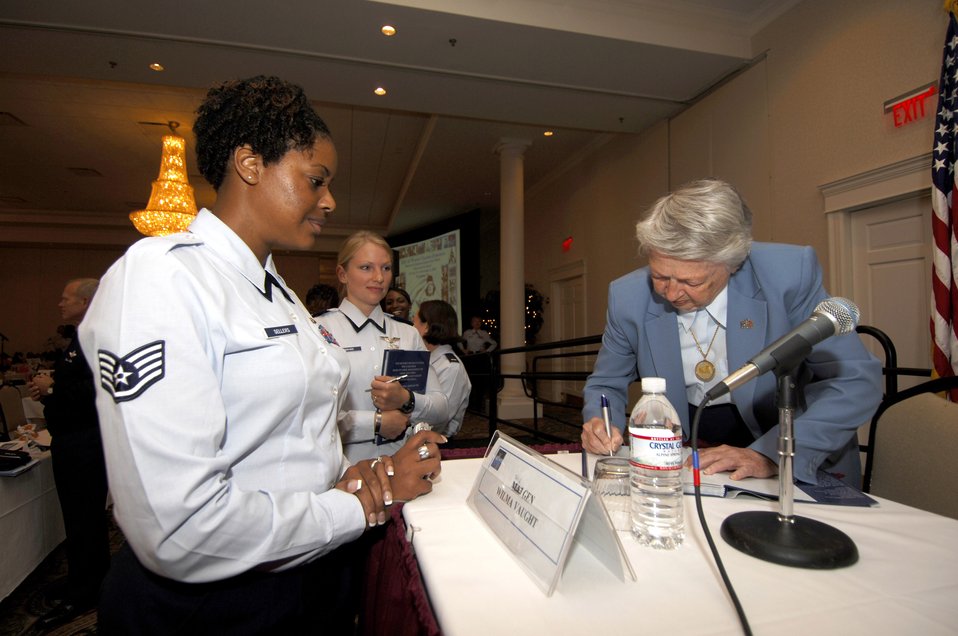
Captial Shield 2008

Brig. Gen. Wilma Vaught, signs a book for Staff Sgt. Nina Sellers at the 2007 Air Force Heritage to Horizon Women's Training Symposium in Springfield, Va., Oct. 31.